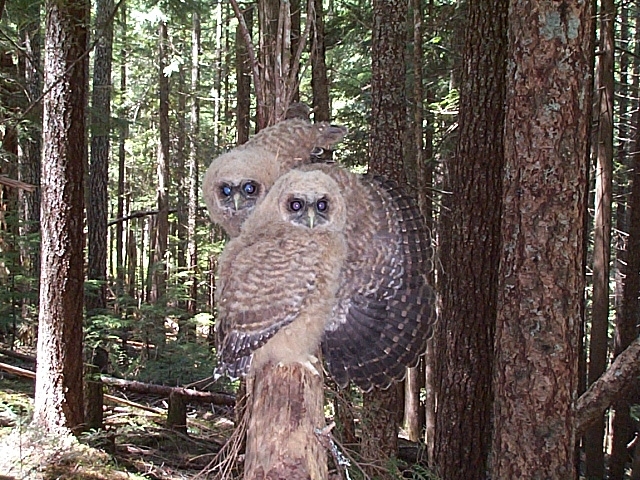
Threat display - Spotted Owls